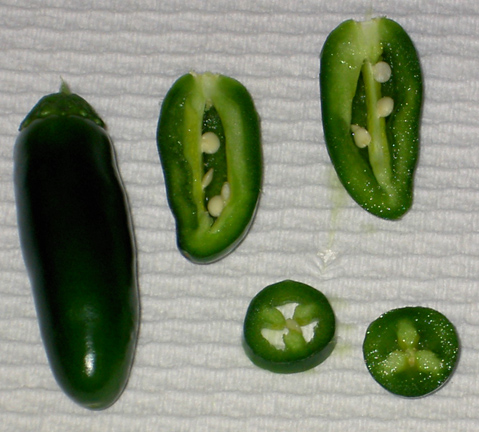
Jalapeno peppers